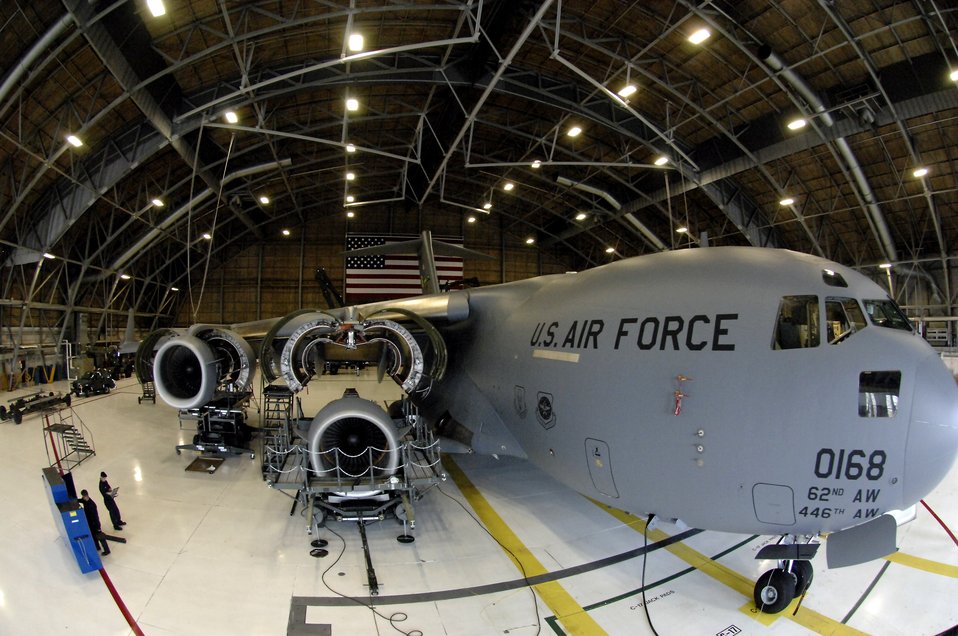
C-17 Globemaster III Engine swap

A C-17 Globemaster III sits in a hangar at McChord Air Force Base Wash. as jet engine mechanics assigned to the 62nd Maintenance Squadron prepare to install a repaired engine during a home station inspection on Monday April 2, 2007.